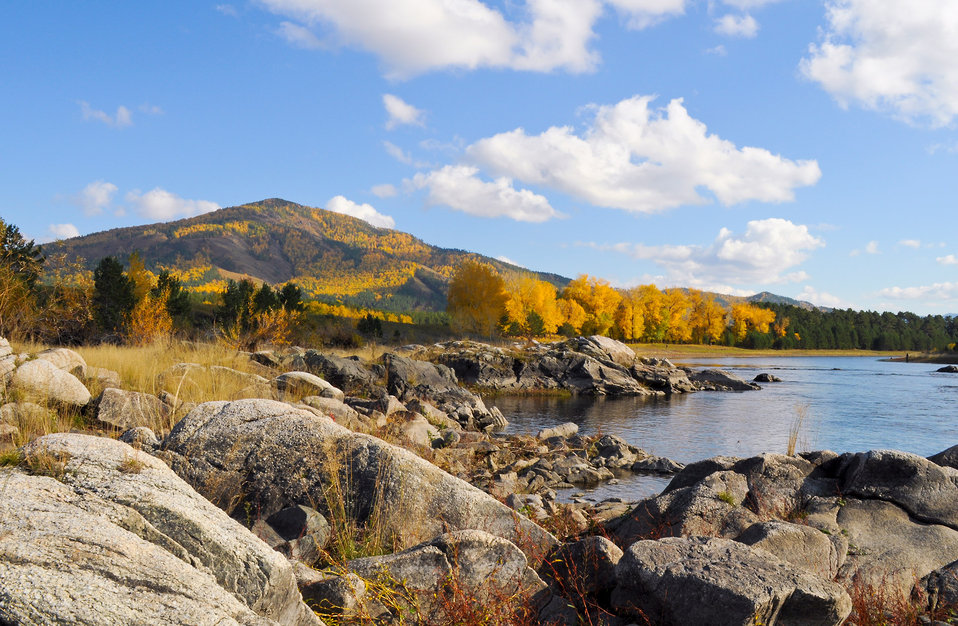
Autumn landscape.